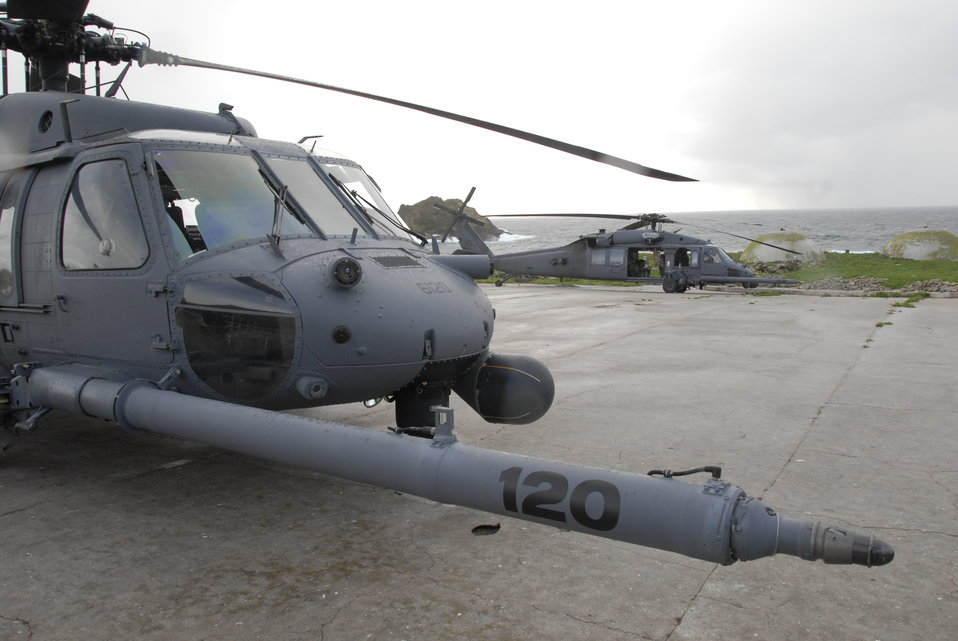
FARALLONS BATTERY MISSION

Two HH-60G Pave Hawk helicopters from the California Air National Guard's 129th Rescue Wing at Moffett Federal Airfield, Calif., sit on a helipad on Farallon Island Feb. 17 waiting for the aircrews to load old photovoltaic batteries after fresh batteries were delivered. Airmen from the unit are assisting the U.S. Fish and Wildlife Service by helping to swap the batteries that power a lighthouse and workshop at the FWS research facility on the island, which sits some 30 miles west of San Francisco.